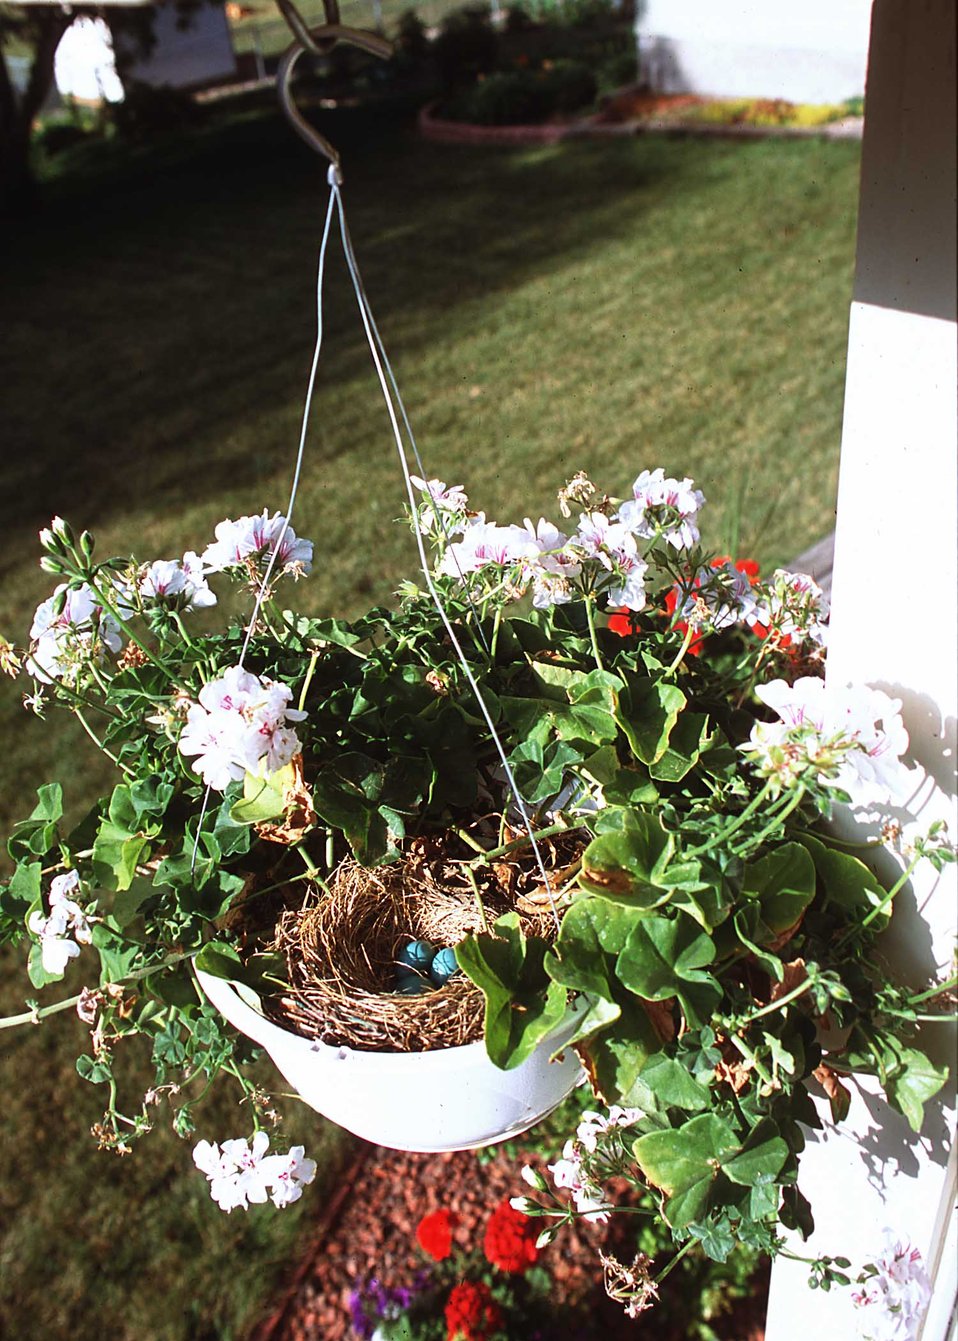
A robin made a nest and hatched babies in a hanging basket of impatiens flowers in a suburban back yard.